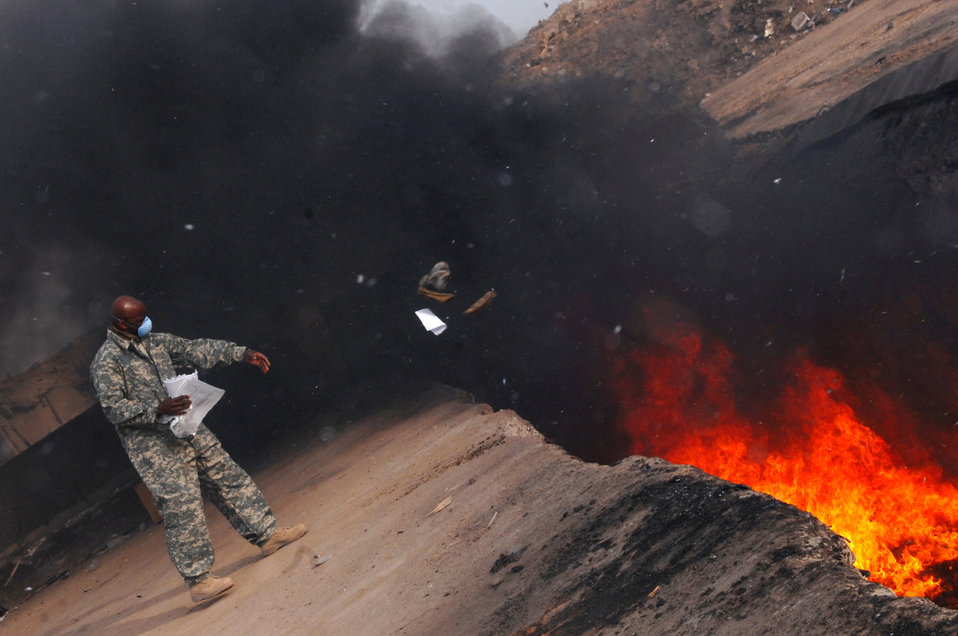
Into the fire

Master Sgt. Darryl Sterling tosses unserviceable uniform items into a burn pit March 10 at Balad Air Base, Iraq. The 332nd Expeditionary Logistics Readiness Squadron has a central collection point that can be used by servicemembers and Department of Defense civilians for unserviceable uniform items that need to be burned. Sergeant Sterling, a 332nd ELRS equipment manager, is deployed from Luke Air Force Base, Ariz.